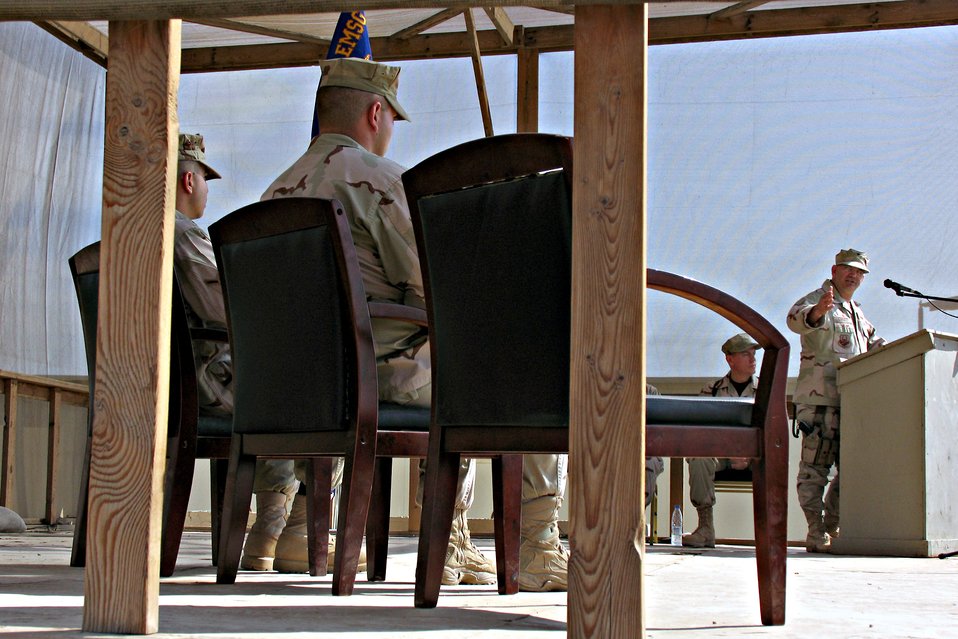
Ceremony

CAMP BUCCA, Iraq - Col. Paul Curlett, 386th Air Expeditionary Wing commander, addresses Staff Sgt. Rory Sturm (center foreground) and Airman Kevin Perez Glazer (left foreground) who were presented Purple Hearts at a ceremony here Nov. 14 for wounds received when their patrol Humvee was struck by an improvised explosive device Oct. 16. Both Airmen are deployed to the 586th Expeditionary Security Forces Squadron Area Security Operations.